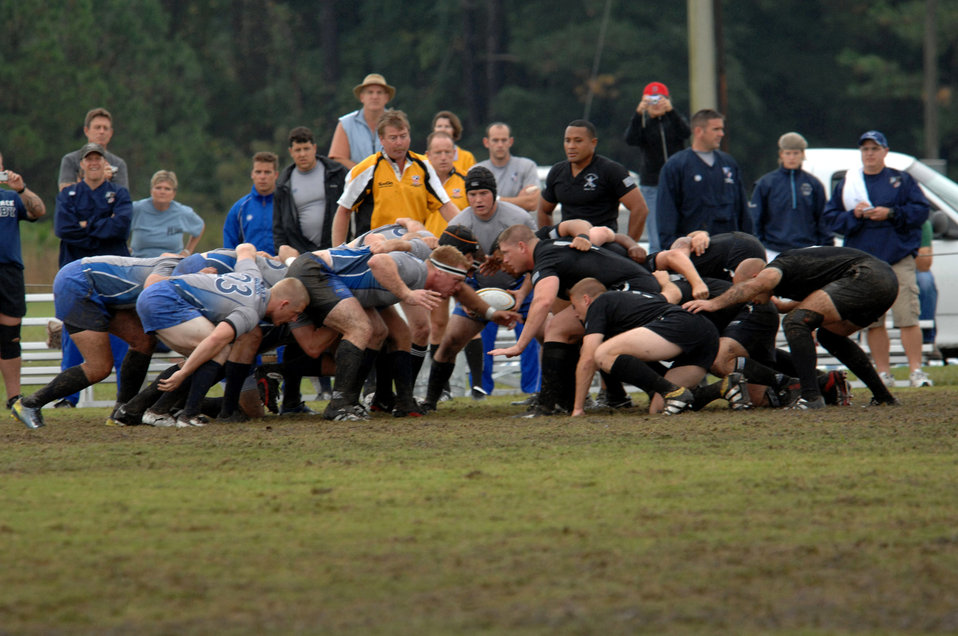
Air Force triumphs over Army

Players from the Air Force and Army face off in a scrum during the 2007 Armed Forces Rugby Tournament, Oct. 27 at Marine Corps Base Camp Lejeune, N.C. Air Force defeated the Army 22-5 for a fourth consecutive championship victory.